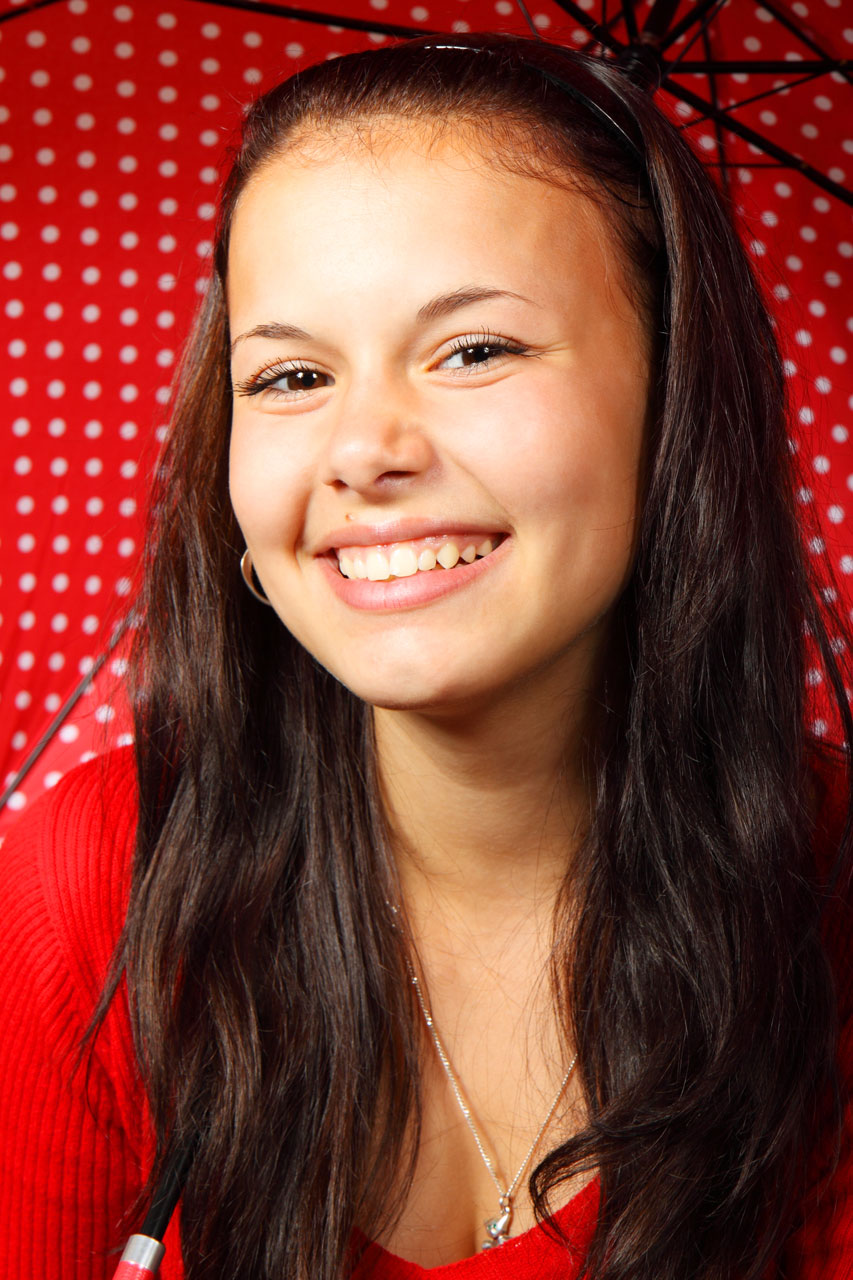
Young woman in red smiling with red umbrella on background.